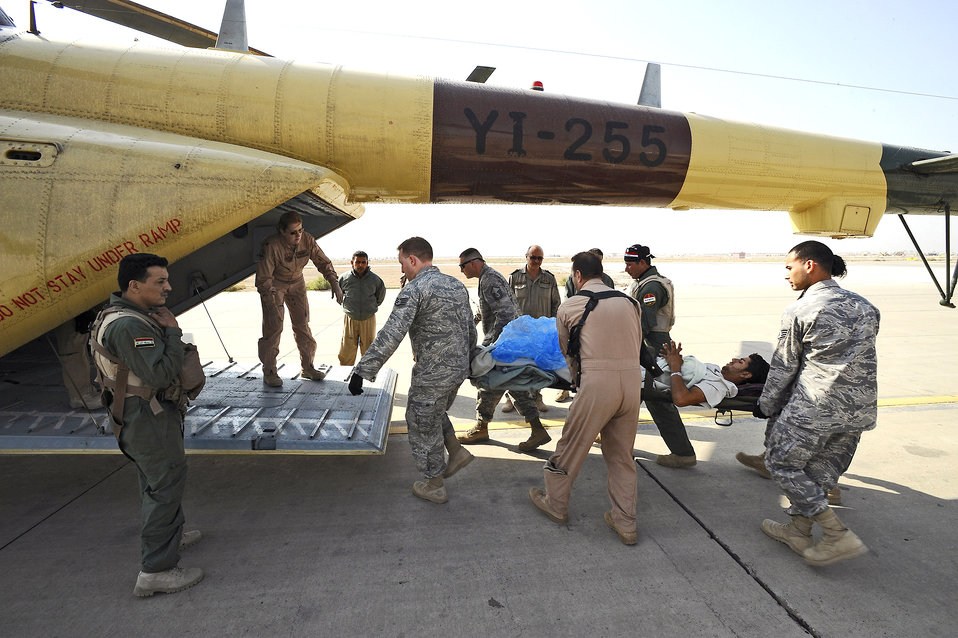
Iraqi air force carries wounded warrior on aeromedical evacuation mission

American and Iraqi airmen load a wounded Iraqi servicemember into an Iraqi air force Mi-17 Hip helicopter at Joint Base Balad, Iraq, Nov. 21. The Iraqi servicemember arrived at the Air Force Theater Hospital Nov. 16 with a gunshot wound to his leg. The Iraqi air force is developing its aeromedical evacuation capabilities to take on a greater role in transporting its patients.